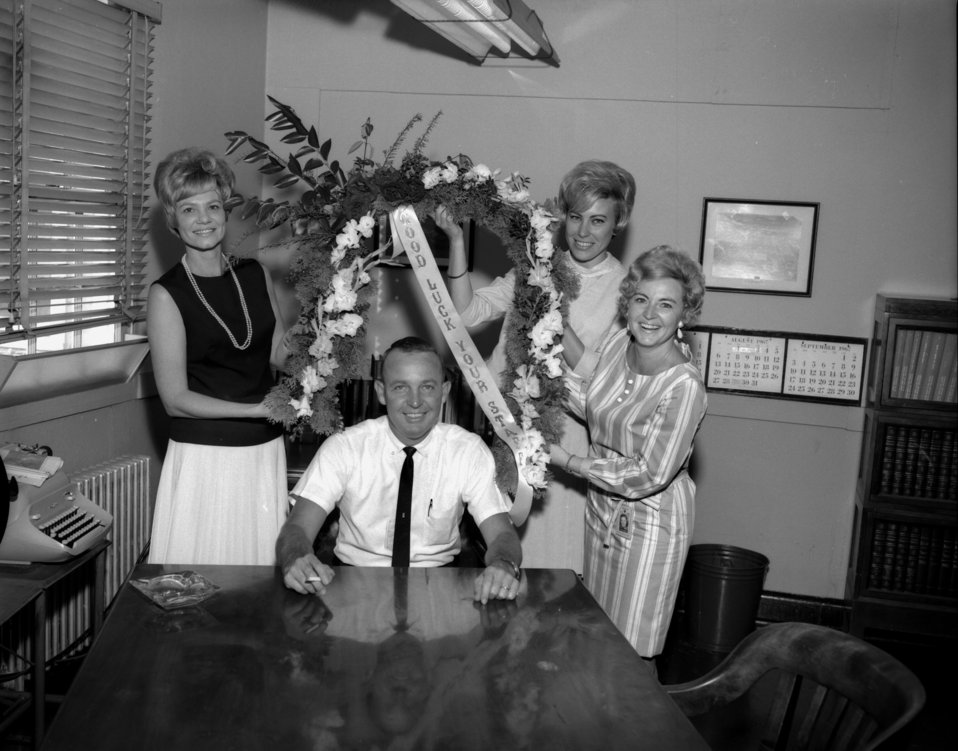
Wayne Range First Day Oak Ridge

67-232 DOE Photo by Frank Hoffman

Wayne Range First Day as Head of PIO for AEC Oak Ridge Tennessee 9/22/1967